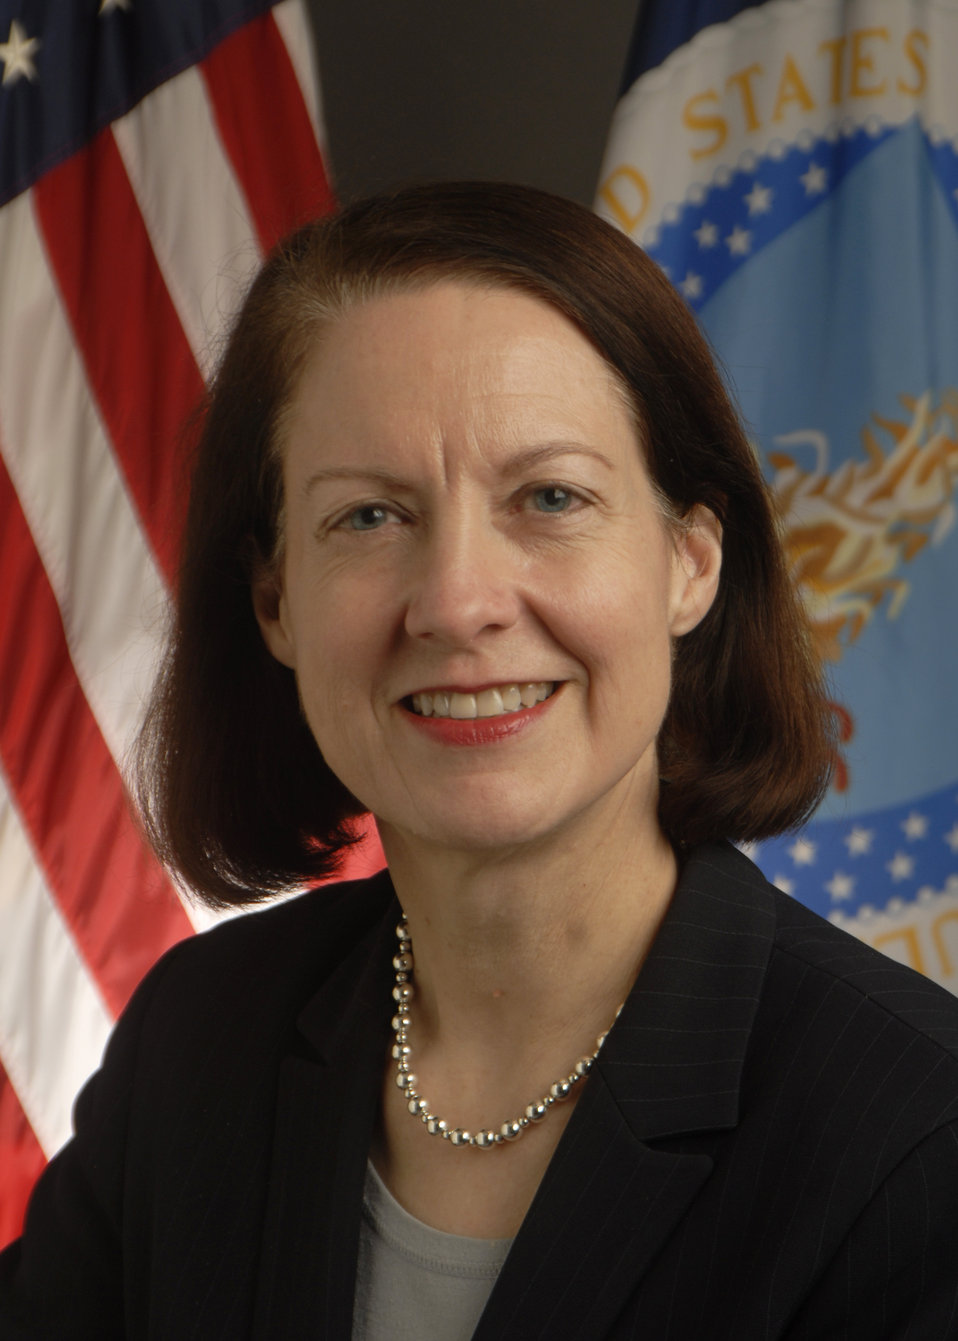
110215-FSA-KJH-0246 Director Economic and Policy Analysis Staff, Farm Service Agency Joy Harwood

Director Economic and Policy Analysis Staff, Farm Service Agency Joy Harwood.